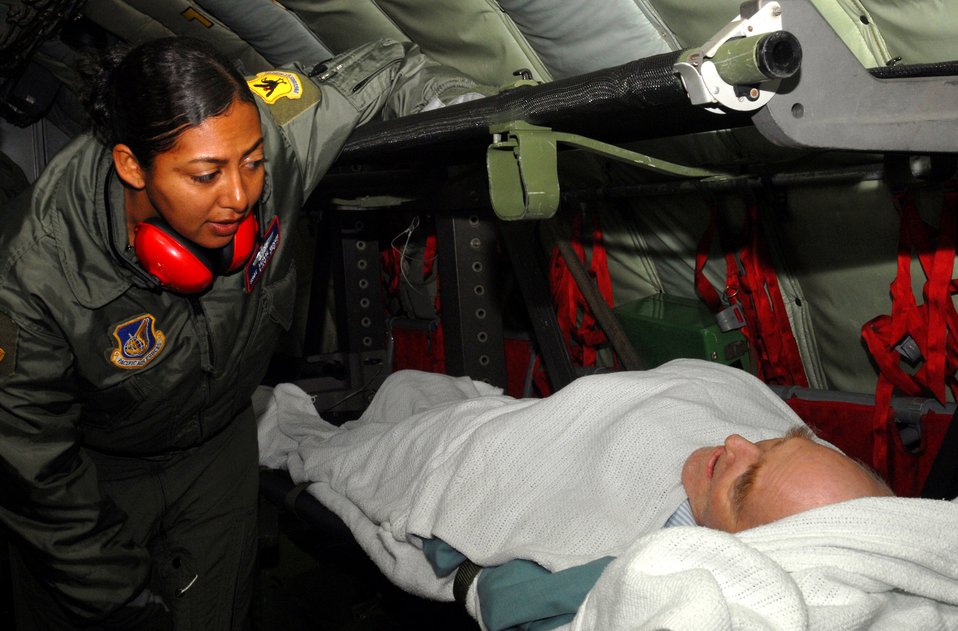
Kadena Airmen aerovac patients in need

Staff Sgt Leslie Green checks with a patient during a Dec. 18 flight to Kadena Air Base, Japan. Sergeant Green is a medical technician from the 18th Aeromedical
Evacuation Squadron. Members of the 18th AES travel throughout the Pacific picking up critical patients and transporting them to hospitals that can meet their needs.